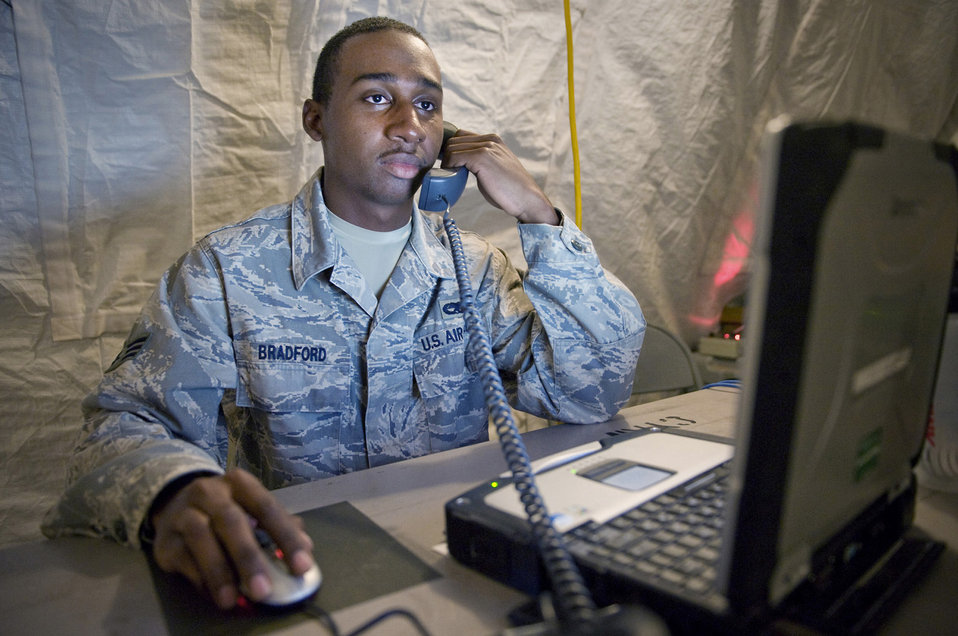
32 CBCS New Horizons

Senior Airman Matthew Bradford assists a customer over the phone with a trouble ticket July 28, 2010, during Exercise New Horizons Panama 2010. Airman Bradford is deployed from the 32nd Combat Communications Squadron,